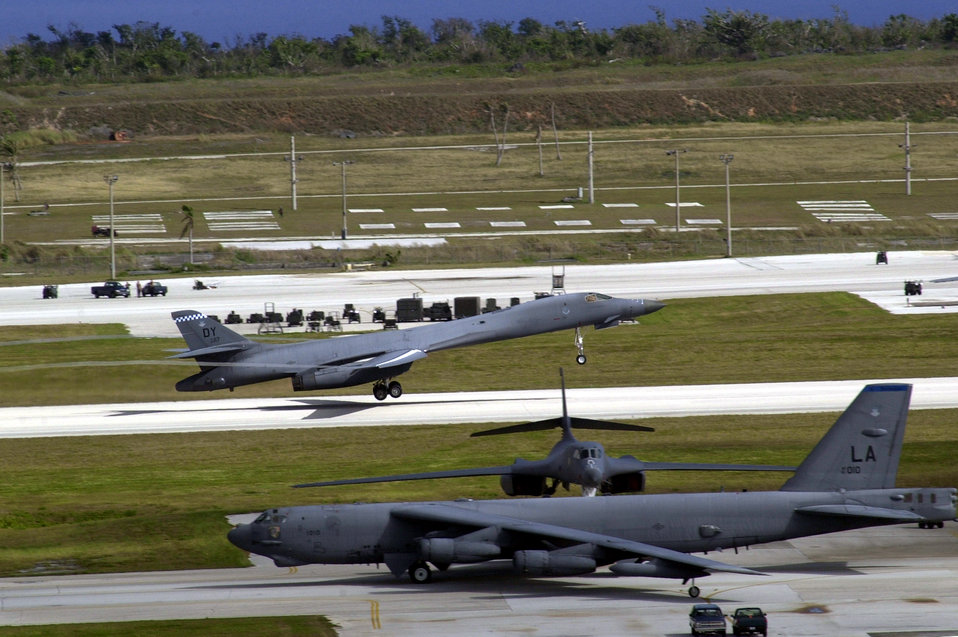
Surge

OPERATION IRAQI FREEDOM -- A B-1 Lancer takes off as a B-52 Stratofortress taxies past, readying for take-off from Andsersen Air Force Base, Guam during last day of surges.